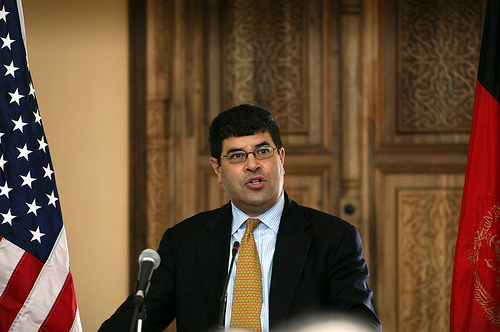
Speech at the American University of Afghanistan

Deputy Secretary Wolin speaking at the American University of Afghanistan on the importance of building Afghanistan’s economic and governing capacities, encouraging civilian engagement, and educating future generations to help secure the future of Afghanistan as a stable, free and economically independent member of the community of nations.